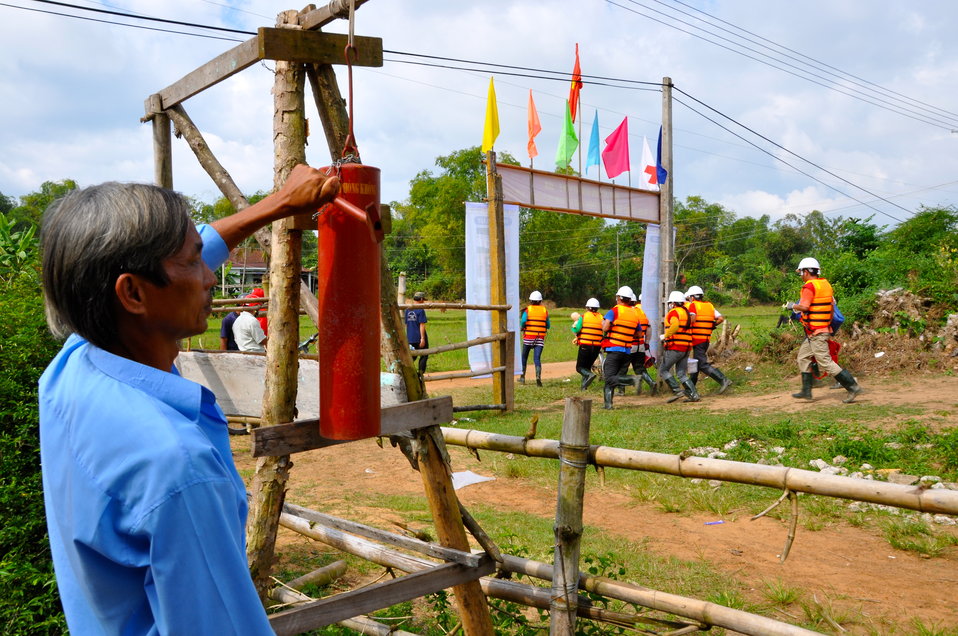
USAID, Red Cross Support Disaster Response Drill in Duy Hoa Commune, Quang Nam Province

Duy Hoa Commune, Quang Nam Province
December 5, 2012